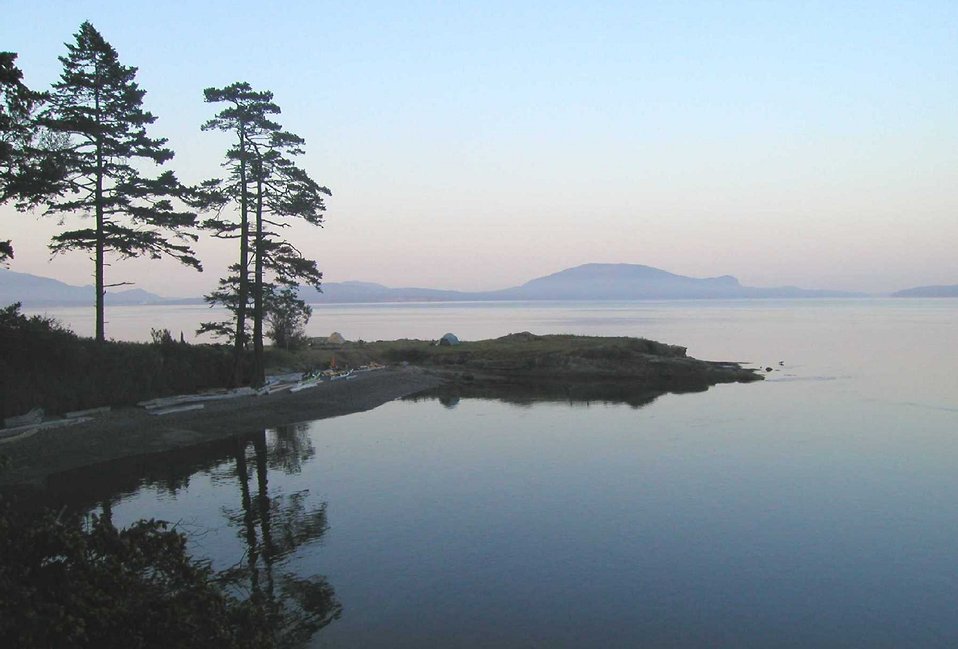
Active Cove, Patos Island Neal Hedges, Wenatchee LandscapeHM